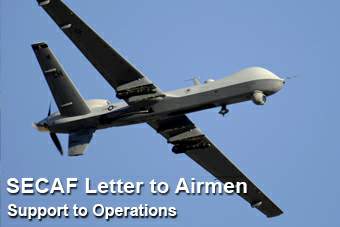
Letter to Airmen

In his latest Letter to Airmen,Secretary of the Air Force Michael W. Wynne salutes all those who support operations.